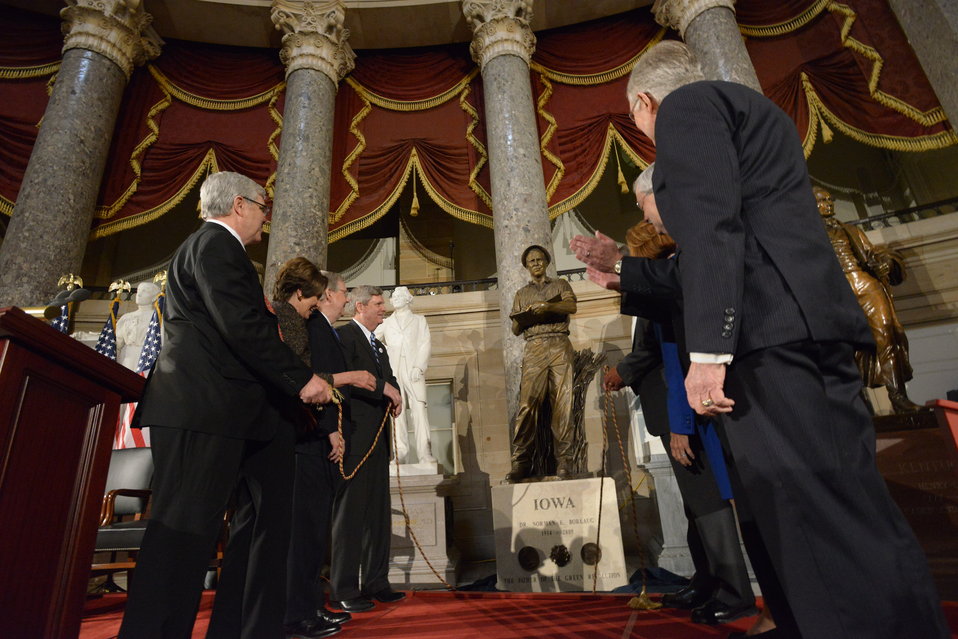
The Dr. Norman Borlaug statue is unveiled in the National Statuary Hall at the U. S. Capitol in Washington, D.C. on Tuesday, Mar. 25, 2014. (L to R Mr. Bill Borlaug (son of Dr. Borlaug), Minority Leader of the House of Representatives Nancy Pelosi, Minority Leader of the U.S. Senate Mitch McConnell, Agriculture Secretary Tom Vilsack, Speaker of the House of Representatives John Boehner, Mrs. Jeanie Borlaug Laube (daughter of Dr. Borlaug) Iowa Governor Terry Branstad and Majority Leader of the U.S. Senate Harry Reid).